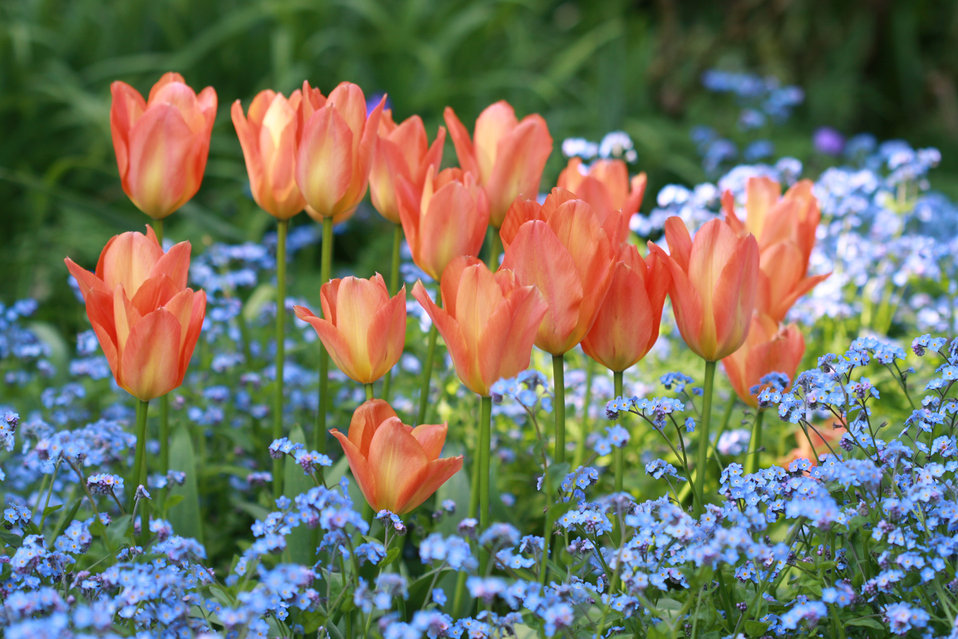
Flowers background

Orange tulips and blue forget-me-not flowers background.